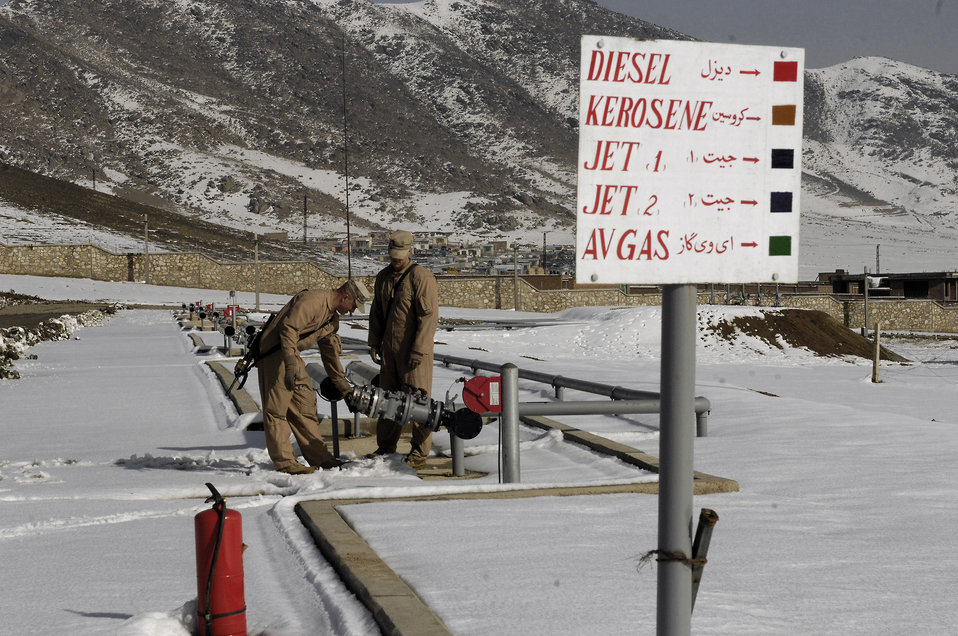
U.S., Afghan forces unite to open fuel depot

Technical Sgt. Brett Rudish and Staff Sgt. Jason King inspect an offloading header Feb. 17 at Khuja Rawash in Kabul, Afghanistan. Sergeants Rudish and King are assigned to the 755th Air Expeditionary Group with the Logistics Embedded Training Team of Combined Security Transition Command-Afghanistan.